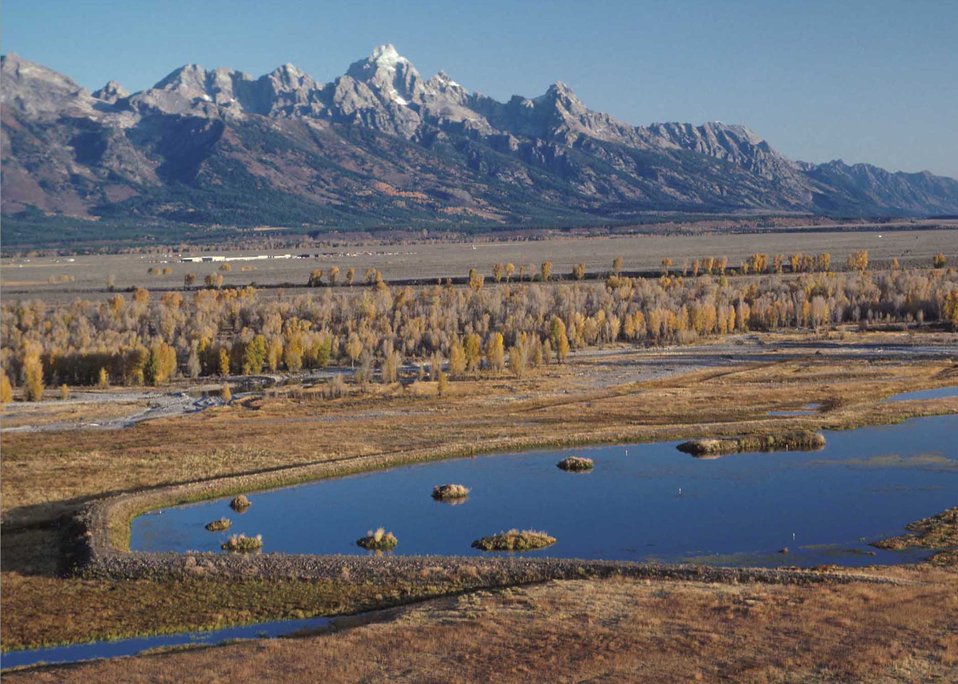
This constructed wetland near Jackson, Wyoming will provide good habitat for migrating waterfowl.